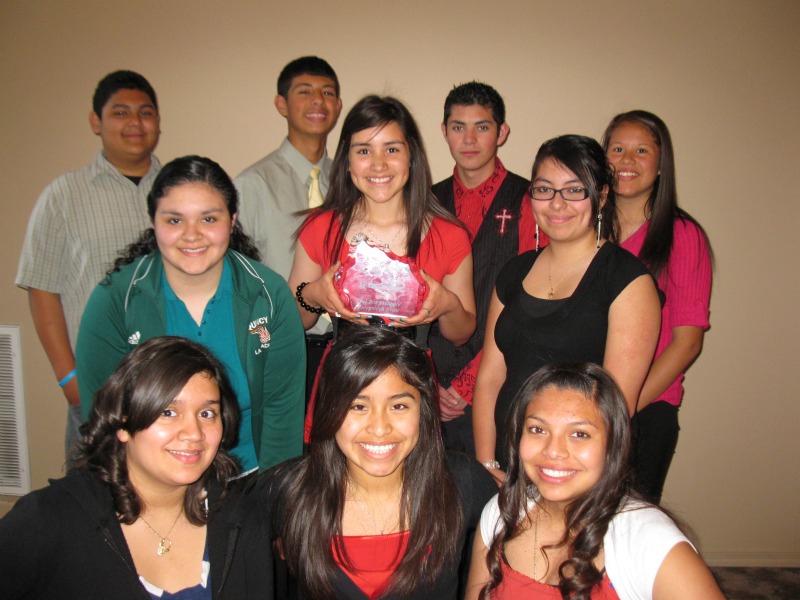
Washington's Youth Action NDFW 2013

Quincy, Wash., The Youth Action students received a scholarship to the Spring Youth Forum held by the Attorney General’s office for the state of Washington to come and and present their information from “National Drug Facts Week.' They competed against 42 other youth teams across the state. During “National Drug Facts Week,” the Youth Action students presented to 7th grade classrooms shattering myths that students had about drugs and drug abuse.